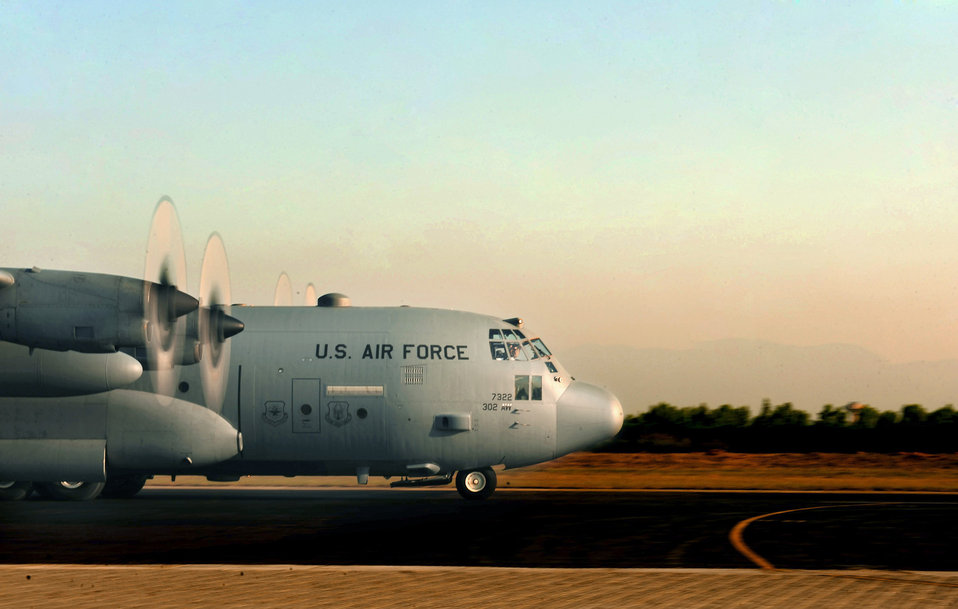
Flood relief

U.S. Air Force C-130 Hercules takes off Oct. 3, 2010 from Pakistan Air Force Base Chaklala to deliver flood relief aid to Skardu Airport in northern Pakistan. U.S. military aircraft, working in close coordination with the Pakistan military, have transported more than 6.6 million kilograms of relief supplies and evacuated 21,000 people in the flood-affected regions of Pakistan during August and September.